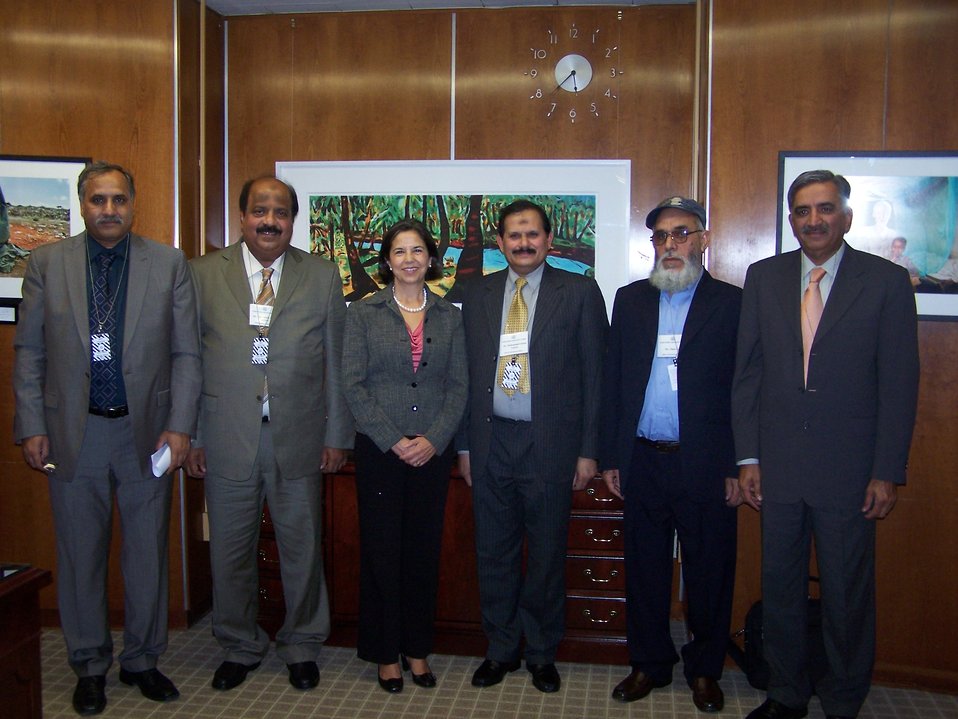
Under Secretary Otero Chairs a Working Group With Pakistani Water Experts

U.S. Under Secretary of State for Democracy and Global Affairs Maria Otero chairs a meeting with a group of Pakistani water experts who are visiting the United States this month as part of the International Visitor Leadership Program (IVLP) at the U.S Department of State in Washington, D.C., on October 19, 2010.